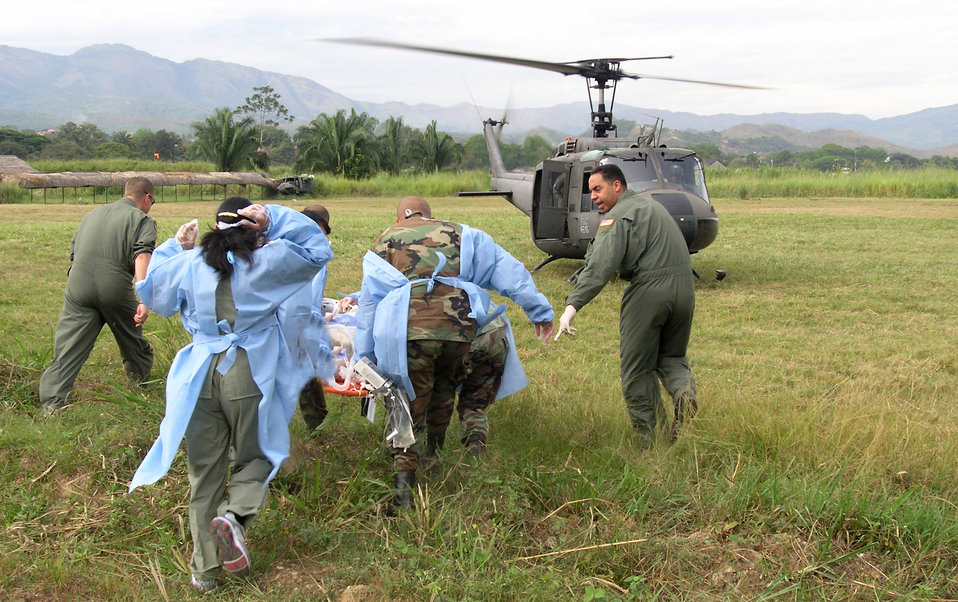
Airman helping to lead way during Colombia mission

Airman 1st Class Edgardo Sanchez de Jesus instructs students on how to safely approach a helicopter for patient transport during an International Aeromedical Evacuation Critical Care Transport Course in Colombia Aug. 15. Airman Sanchez de Jesus is a cardiopulmonary technician with the 759th Surgical Operations Squadron at Lackland Air Force Base, Texas.